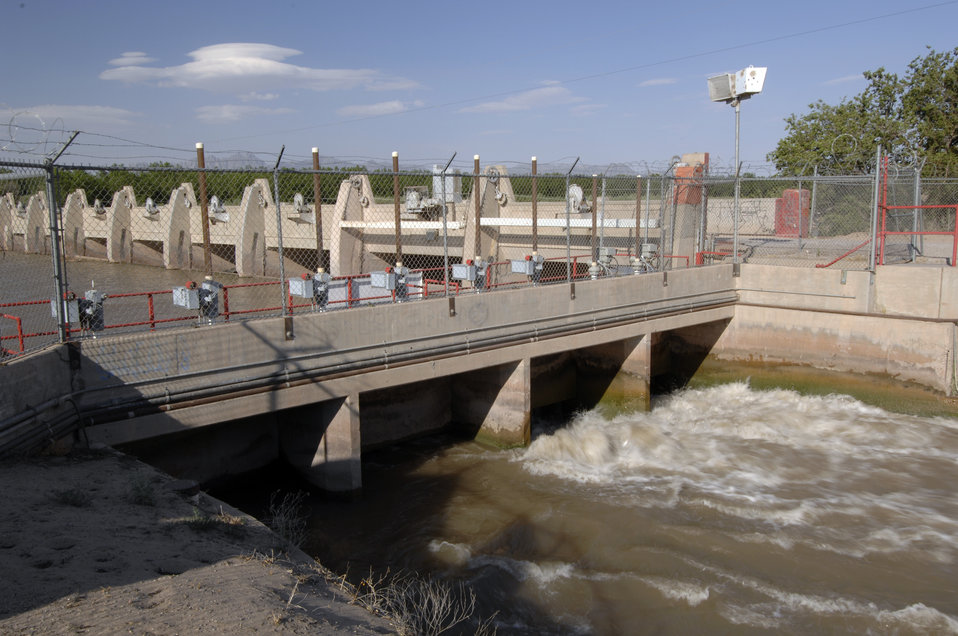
The U.S. Department of Agriculture's (USDA) Cooperative State Research, Education, and Extension Service (CSREES) administers the Rio Grande Basin Initiative (RGBI) in New Mexico in cooperation with the Texas AgriLife Extension Service, Texas AgriLife Research, the College of Agriculture and Life Sciences at Texas A&M University, and New Mexico State University on June 2, 2008. This project addresses water management throughout the Rio Grande Basin, bringing together research, extension, and education efforts to address local, state, regional, national, and international water concerns. Unlike the cement-lined canals that prevent leeching, the earthen acequias allow seepage into groundwater. Acequias are the traditional irrigation ditches or canals in New Mexico. Research has found that the seepage is not wasted but has an added benefit to the environment. The seepage promotes riparian buffers, cleaner groundwater and a more efficient storage of water.